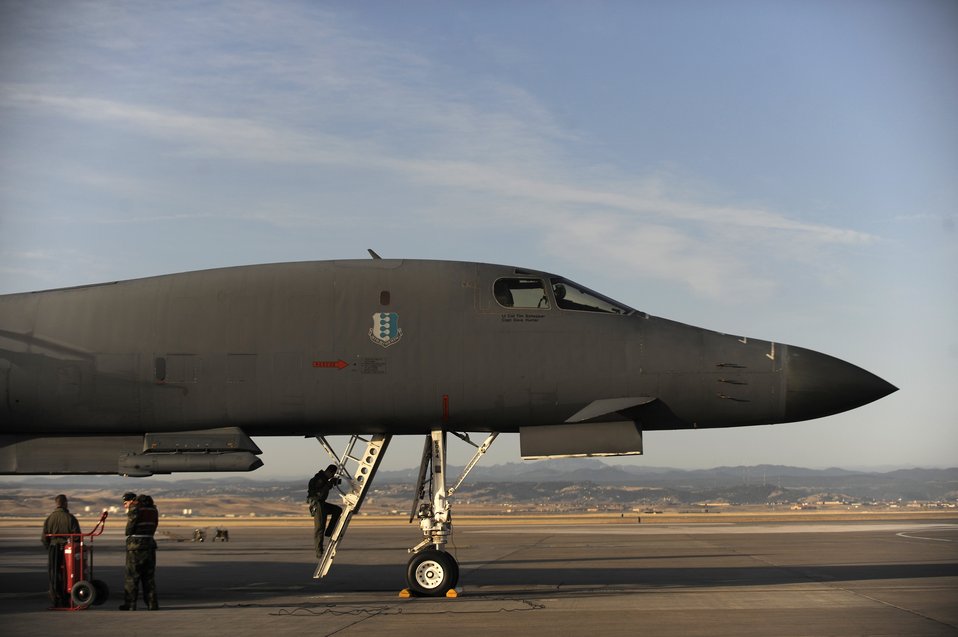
Airpower summary for April 4.

B-1B Lancers can rapidly deliver massive quantities of precision and non-precision weapons against any adversary, anywhere in the world, at any time.